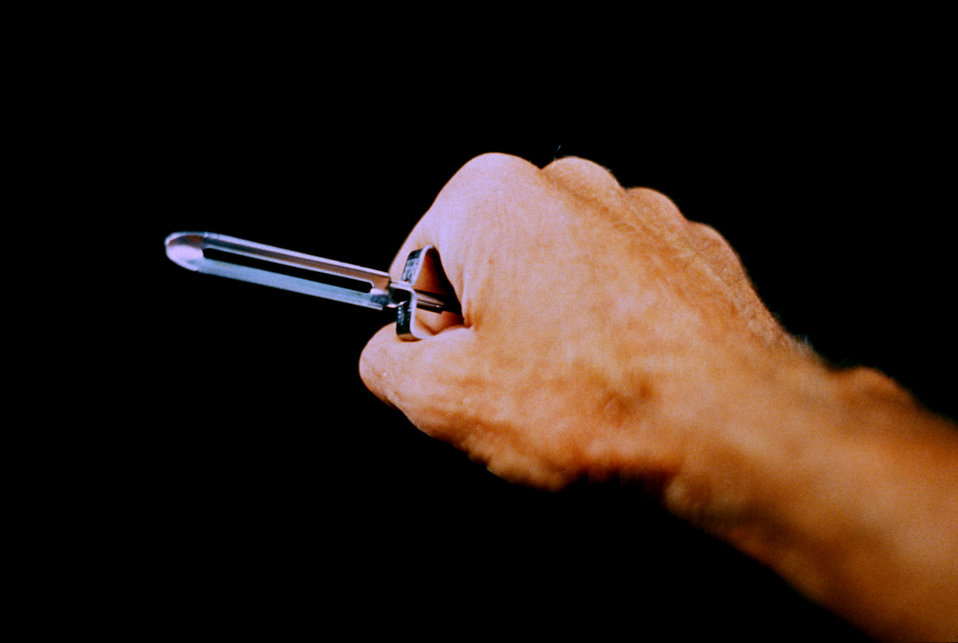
This 1996 photograph, is one of four PHIL images (see PHIL# 9117, 9119 and 9120), which depict the 'Good Grips�', larger, rubber-handled potato peeler with its smaller, all metal, hard edged cousin. The larger, softer, and more easily held peeler was designed with a greater degree of ergonomic user-friendliness in mind. It is able to comfortably fit a wider range of hand sizes with its softer, rubber handle. In this particular photograph, a man's right hand is holding a metal-handled, very small peeler, illustrating how difficult it really is to grasp this kitchen implement.